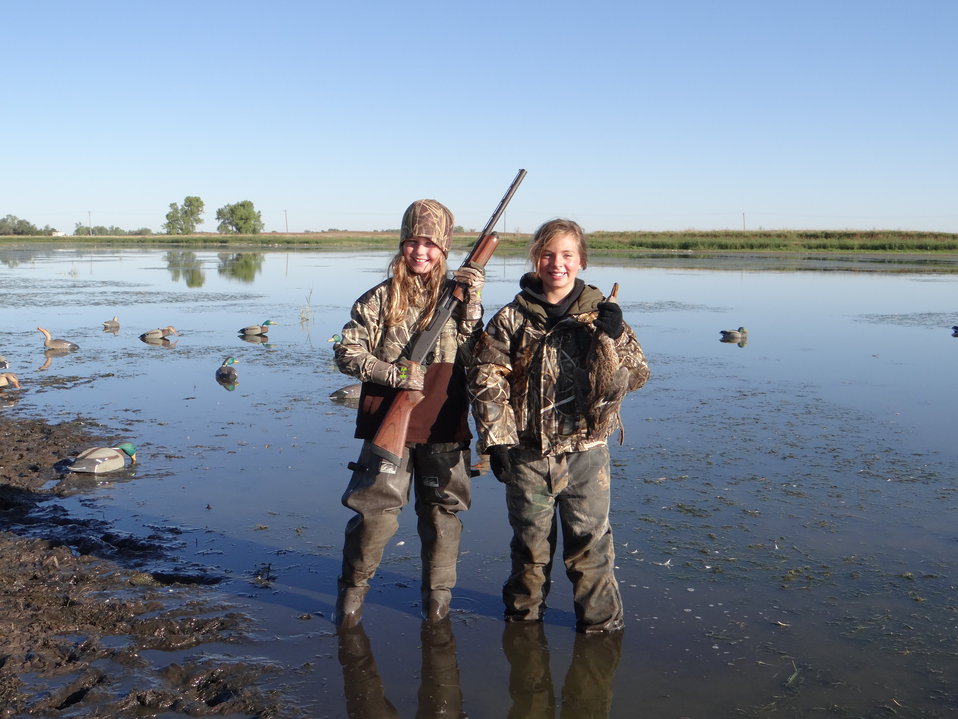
2013 Youth Waterfowl

2013 HURON WMD YOUTH WATERFOWL HUNT. Successful Waterfowl Hunters After the second day morning hunt. The Huron Wetland Management District hosted its 10th annual Youth Waterfowl Hunt in September. This event provided 28 youth hunters between the ages of 12 – 15 and (new) mentored hunters (10-11), an opportunity to learn about various migratory birds and their habitats, duck and goose calling, decoys, and waterfowl hunting techniques. This event continues to be a success each year due to the dedicated volunteers within the community of Huron.